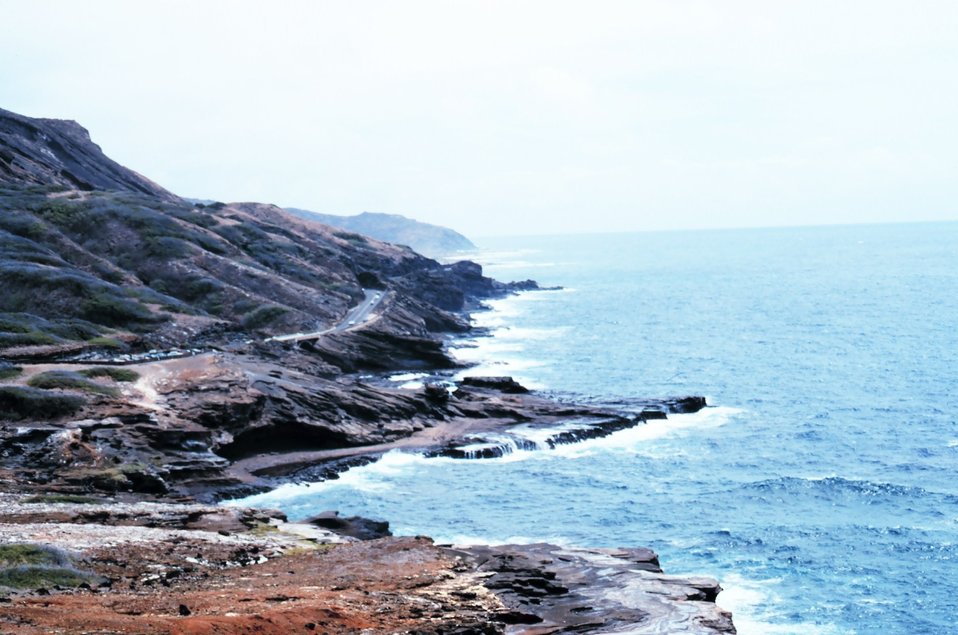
Kalanianaole Highway on the east coast of Oahu